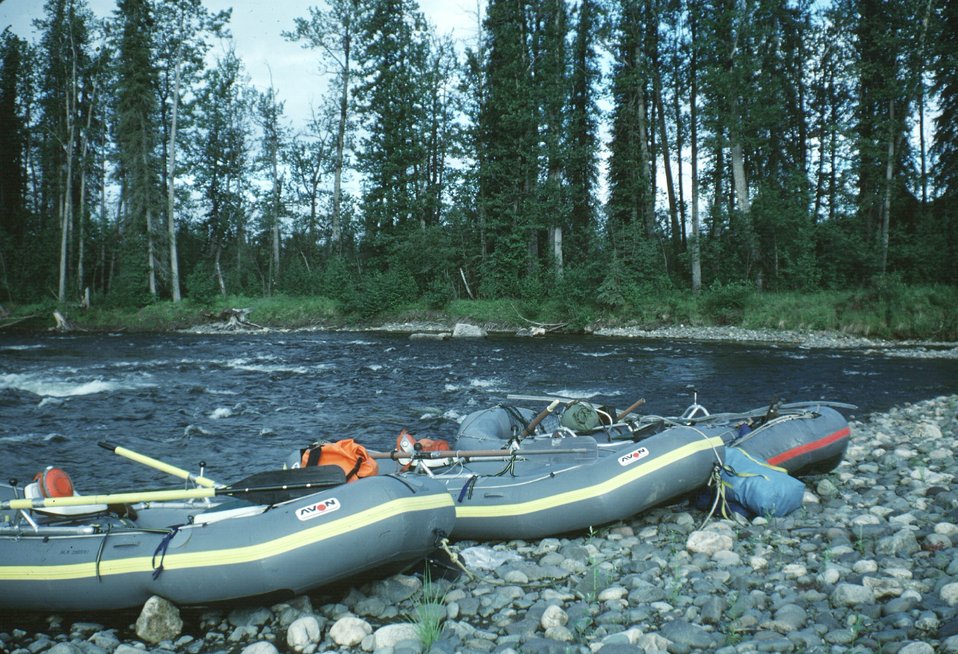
Rafts along shore of Gulkana NWSR, Alaska